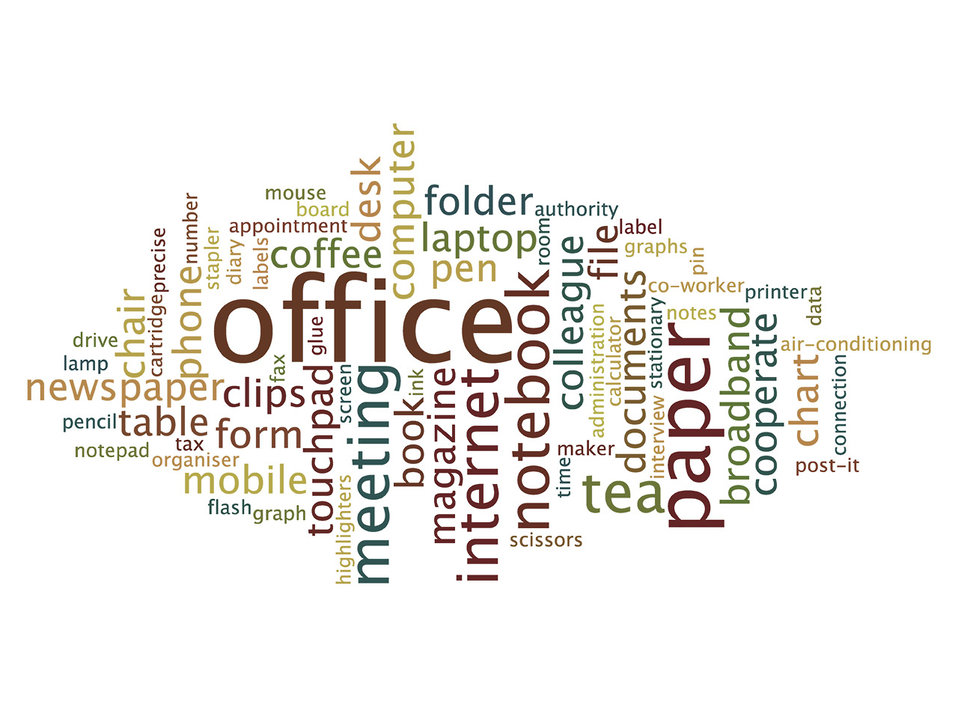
Office word cloud

Abstract image of office items.